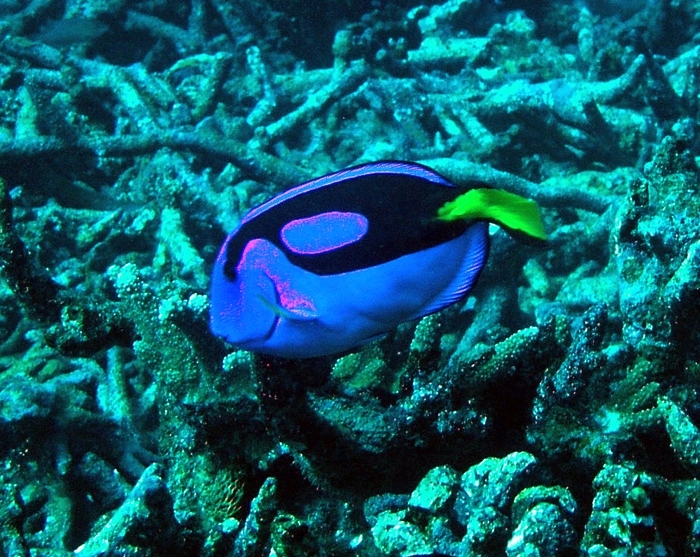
Pacific blue tang at Baker Island NWR

Paracanthurus Hepatus, a coral reef fish also known as Pacific blue tang, scouts the coral at Baker Island National Wildlife Refuge in the Pacific Ocean.